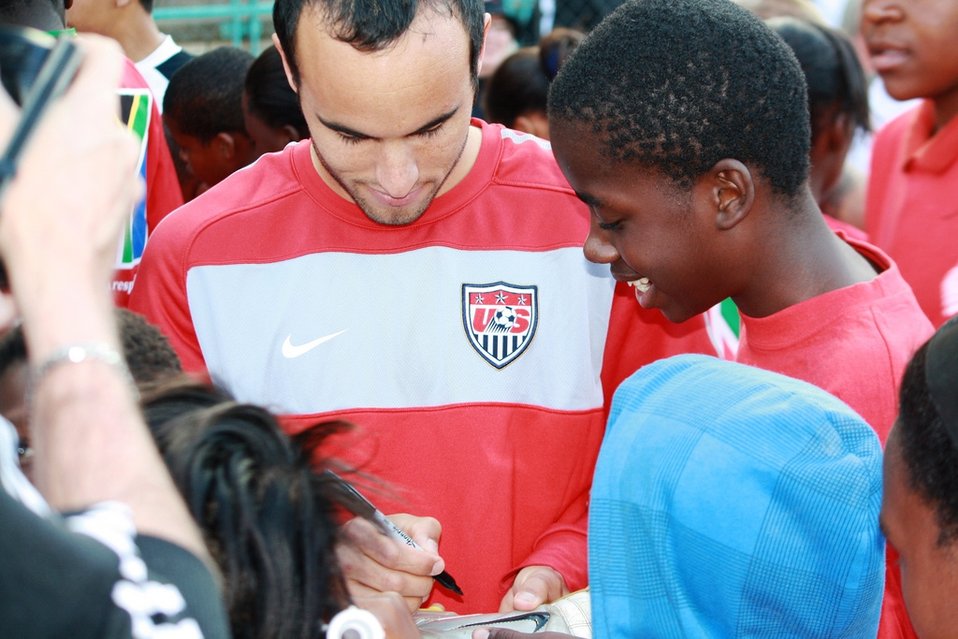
U.S. National Soccer Team Members Signs His Autograph

Midfielder Landon Donovan signs an autograph for a South African student at the U.S. National Soccer Team's open practice session at the Pliditch Stadium in Pretoria, South Africa, on June 6, 2010. The U.S. National Soccer Team is preparing for the 2010 World Cup in South Africa.